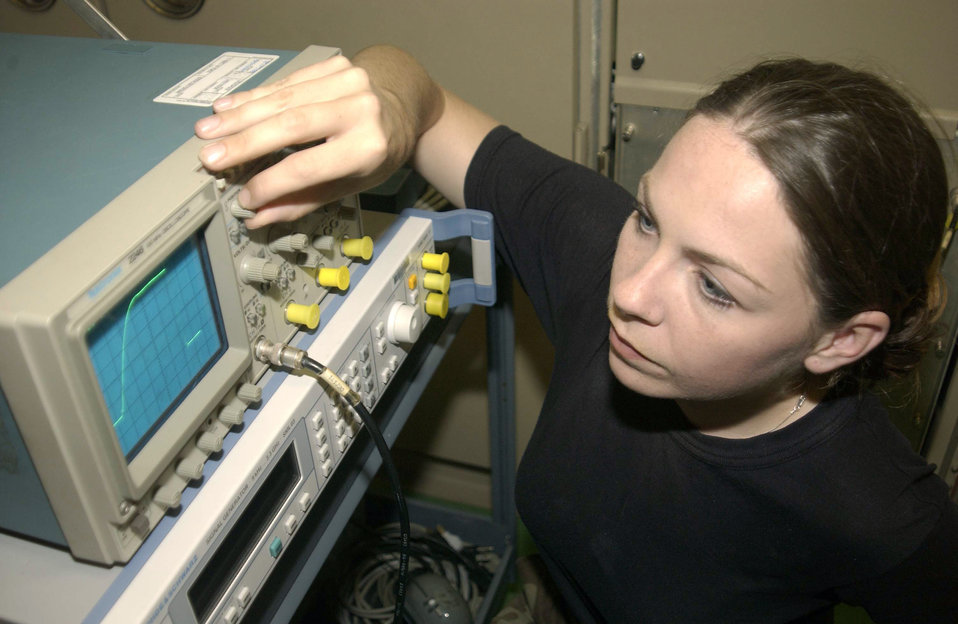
Weather reports

ORCUTT, Calif. -- Airman 1st Class Janina Kowalski takes test measurements on the next generation weather radar with an oscilloscope located on New Love Hill here. The technicians use an O-Scope to measure pulse widths. Airman Kowlaski is a ground radar systems maintenance technician assigned to the 30th Space Communications Squadron at Vandenberg Air Force Base, Calif.